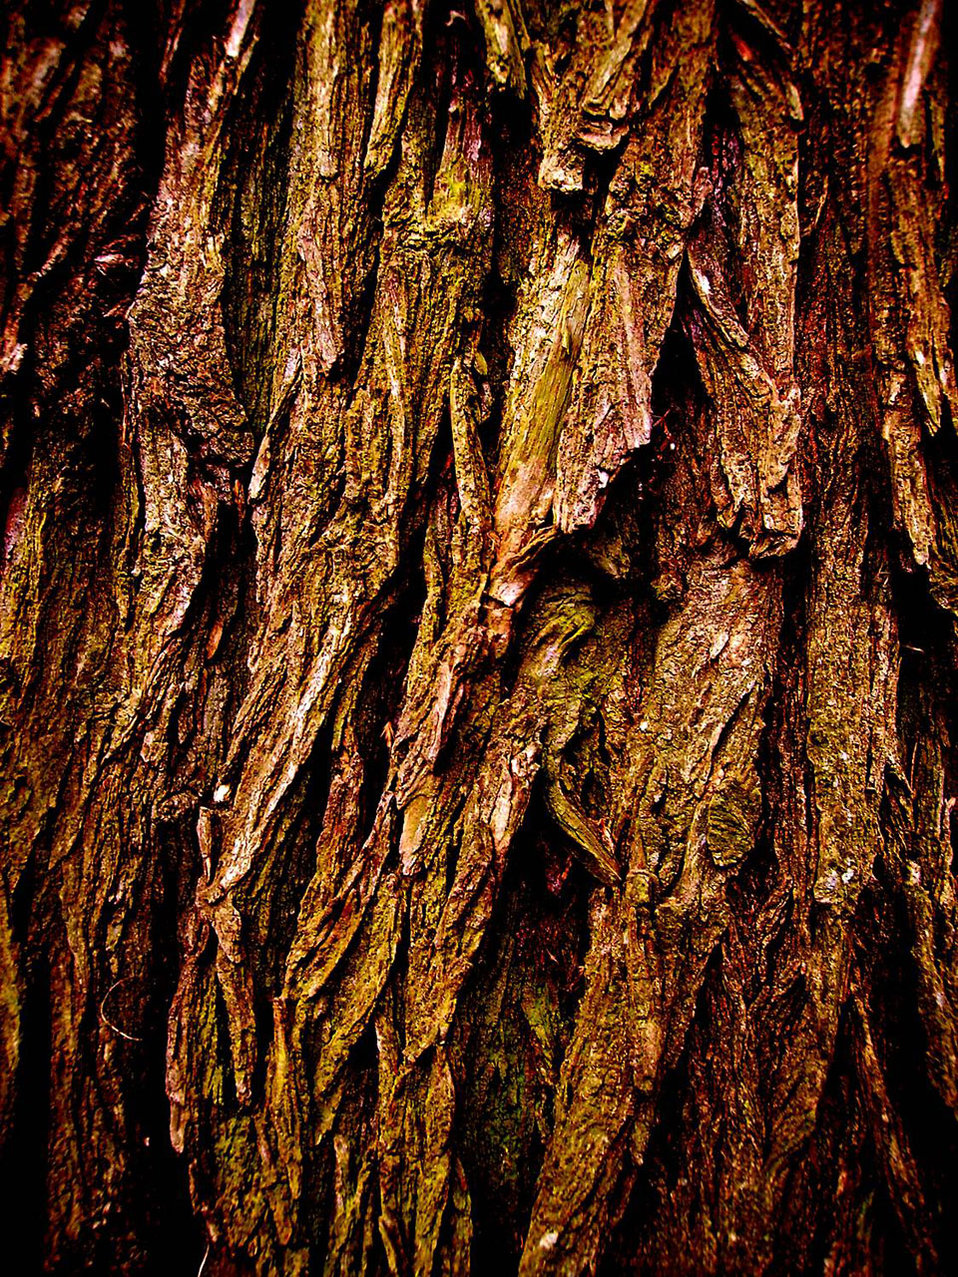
Tree bark texture.